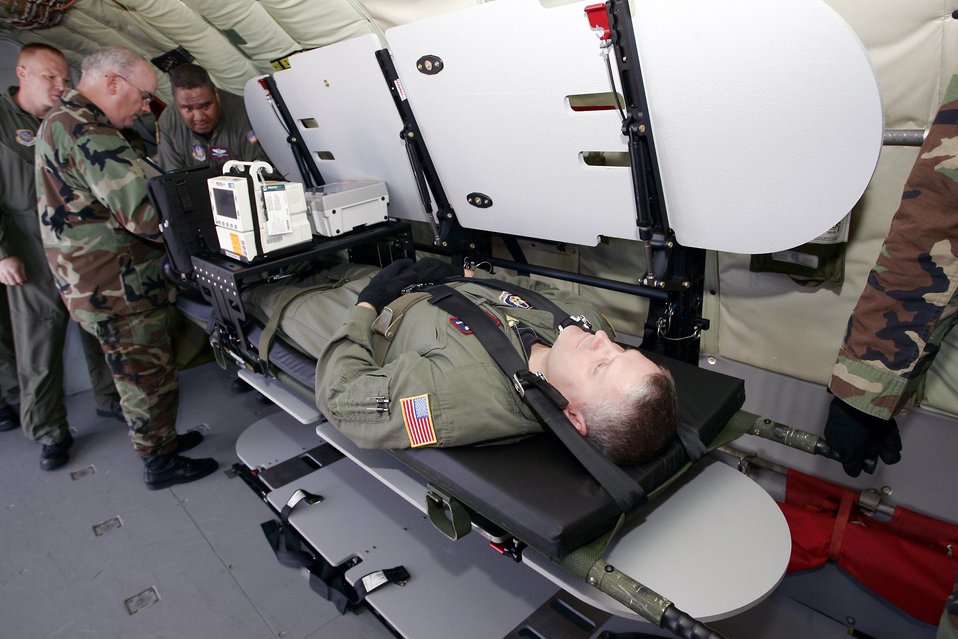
Air Mobility Battlelab's lightweight litter system initiative yields promising results

A KC-135 Stratotanker aircrew member lays on a stacking litter system as part of a demonstration for the system by the Air Mobility Battlelab June 22 at McGuire Air Force Base, N.J. The aircrew member is from the 108th Air Refueling Wing at McGuire AFB. The Air Mobility Battlelab is located in the U.S. Air Force Expeditionary Center on Fort Dix, N.J.